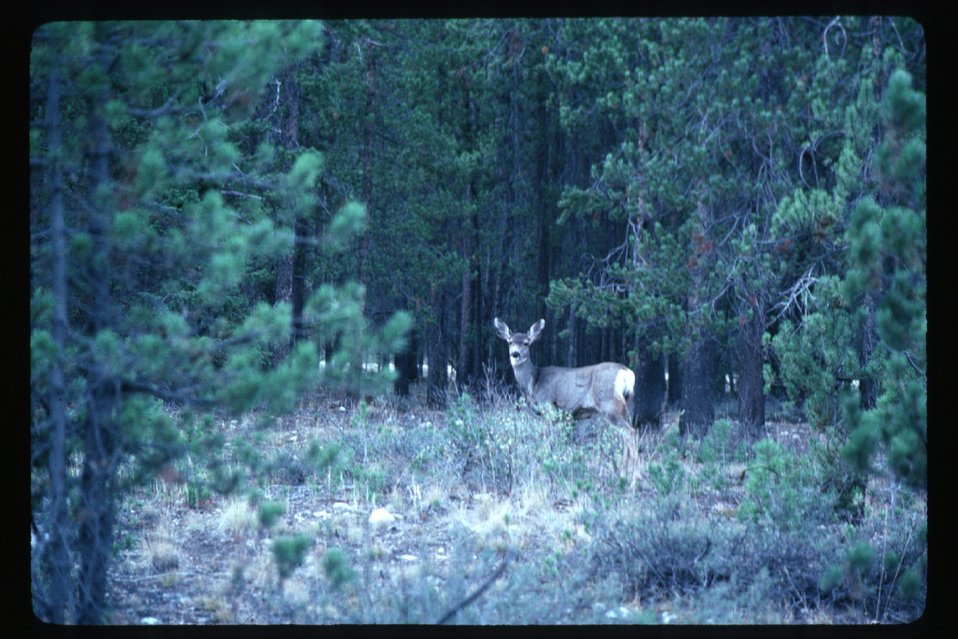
Deer Wildlife USRD Upper Snake River District